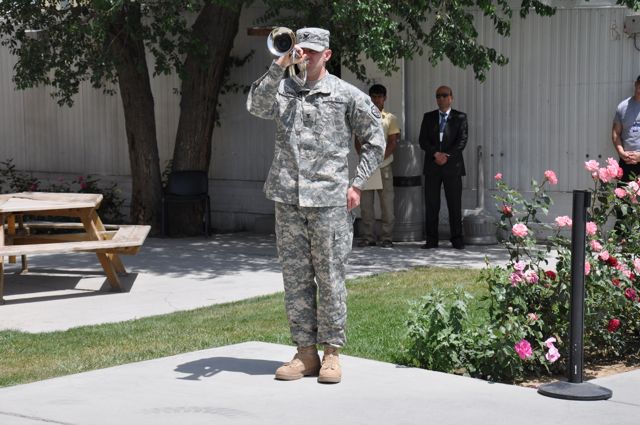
Memorial Day at US Embassy in Kabul